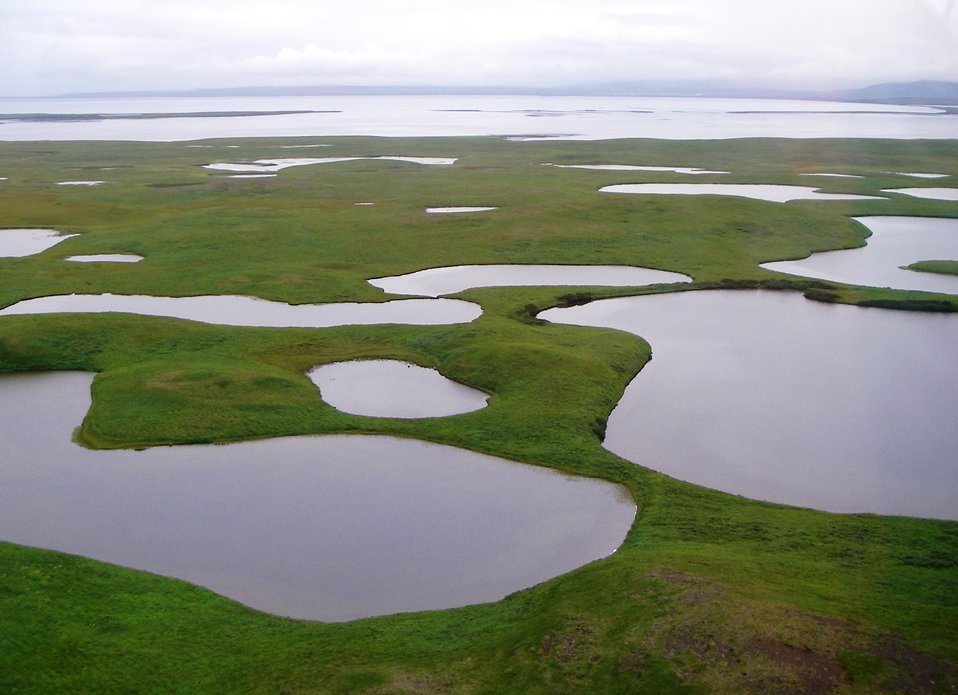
Izembek Wilderness

Wilderness north of Kinzarof Lagoon, Izembek National Wildlife Refuge
Photo by Kristine Sowl,
USFWS, Public Domain